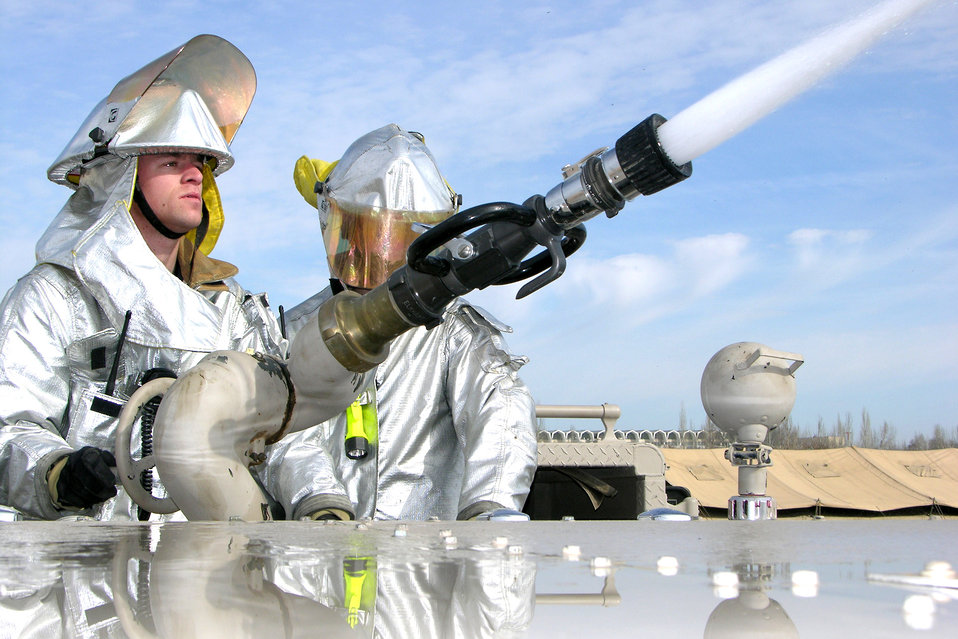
Working under pressure

MANAS AIR BASE, Kyrgyzstan -- Airman 1st Class Sidney Davil (left) and Airman Keith DeJongh perform a